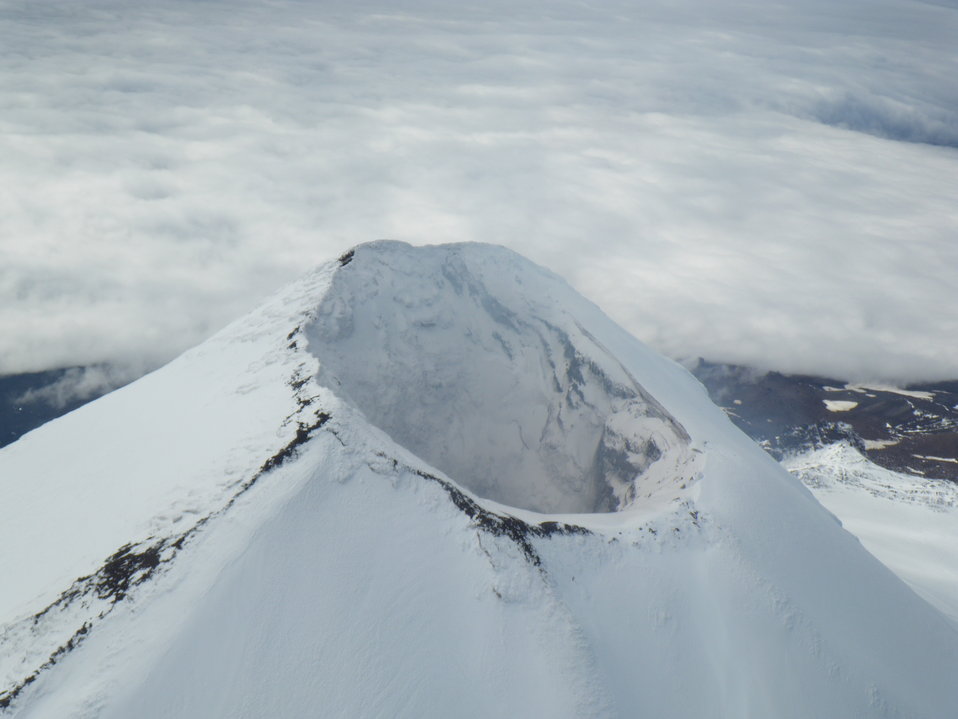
Shishaldin Volcano

Unimak Island, Alaska Maritime National Wildlife Refuge